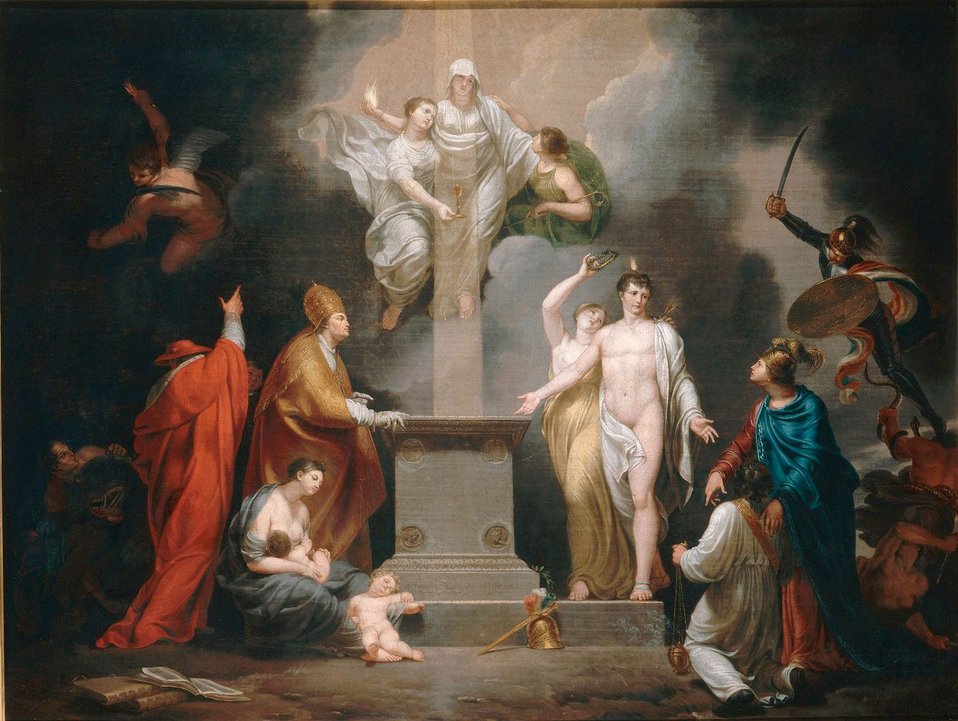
Français : Allégorie du Concordat de 1801